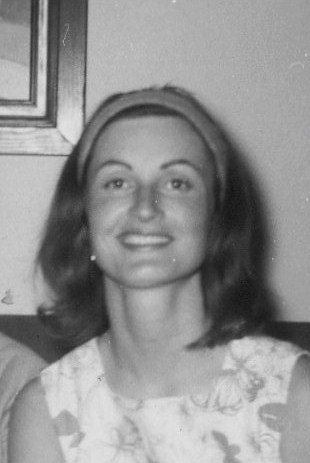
young woman in 1967 hairstyle